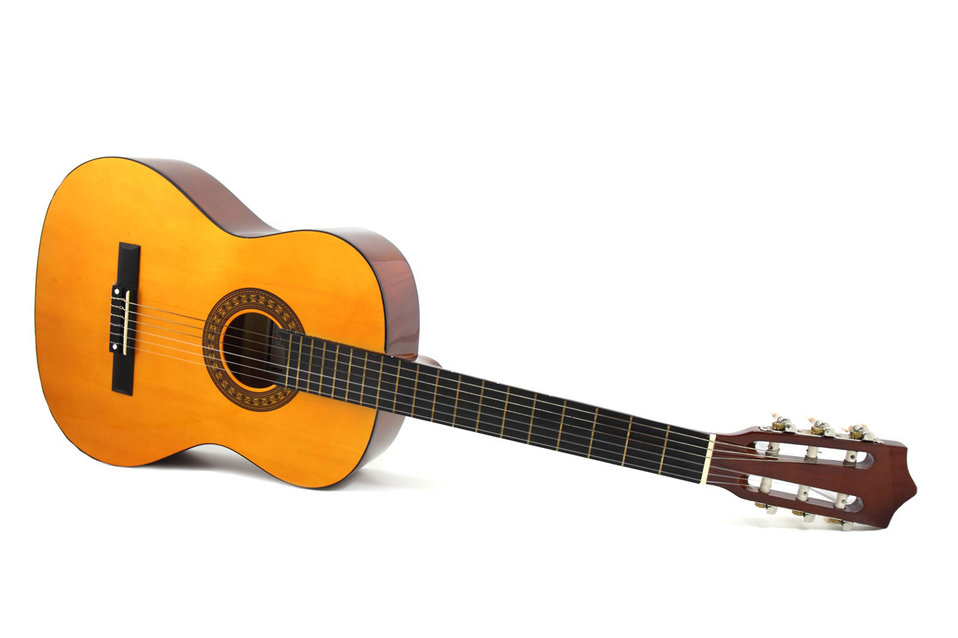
Acoustic guitar isolated on white background.